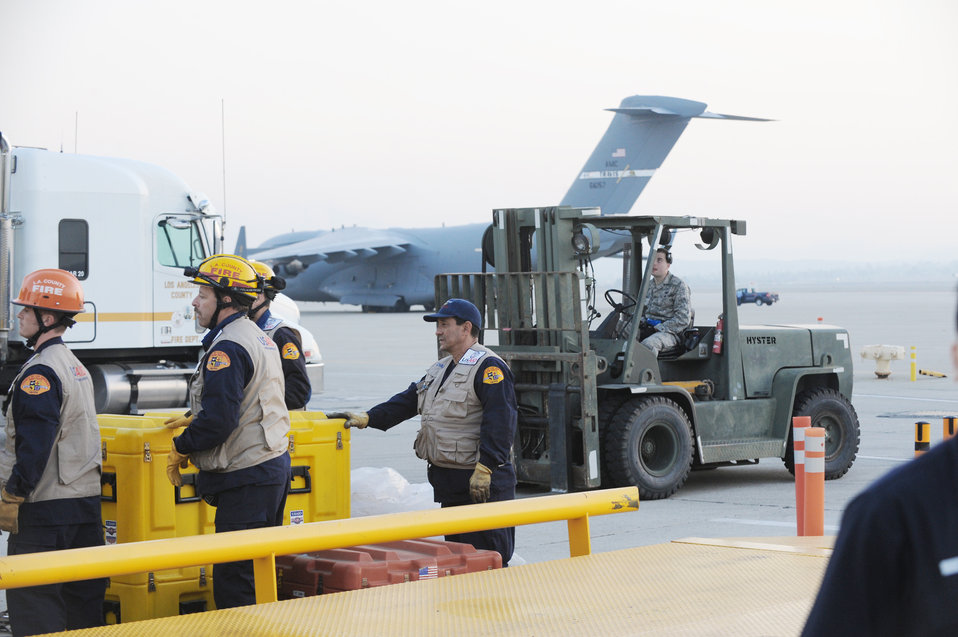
Airmen load C-17s for Haitian relief

Relief workers and search and rescue teams use March Air Reserve Base, Calif., as a staging area to assemble supplies, people and equipment Jan. 13, 2010, following the recent magnitude 7 earthquake in Haiti. All will be loaded on a C-17 Globemaster III and flown into Port-au-Prince, Haiti. The aircraft is assigned to the 60th Air Wing at Travis Air Force Base, Calif.